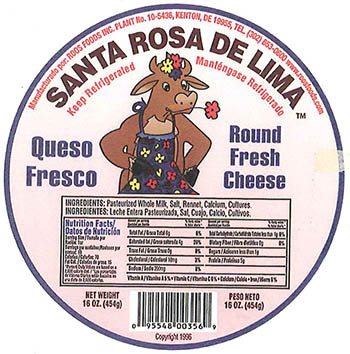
RECALLED – Variety of cheeses

February 23, 2014 – Product Recall – Roos Foods Voluntarily Recalls Variety of Cheeses (listed below) Due to Possible Health Risk.